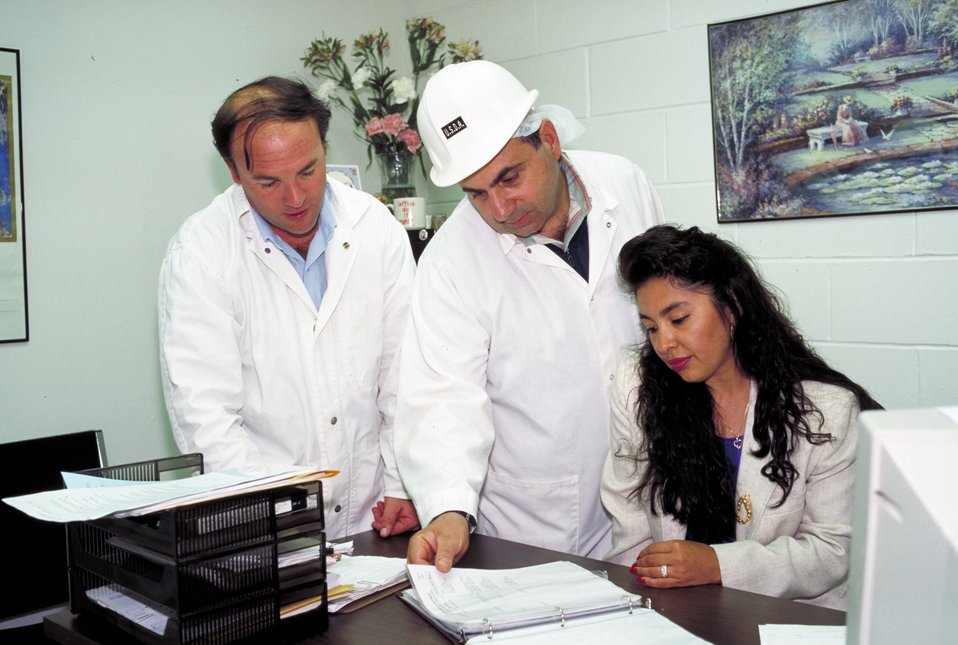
U.S. Department of Agriculture (USDA) Food Safety Inspection Service (FSIS) inspector and plant personnel review plant documentation to ensure compliance with Hazard Analysis and Critical Control Points (HACCP) plan on June 15, 1995.